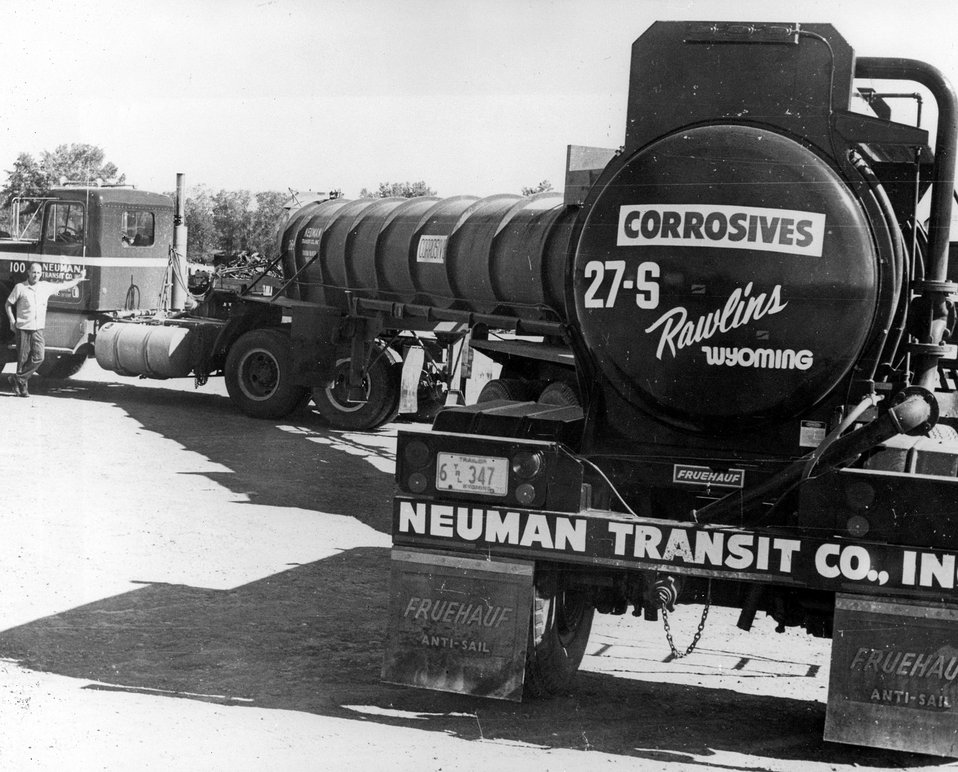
Fred Morrow, driver for Neuman Transit of Wyoming stands by the cab of his 75 ft 'train' acid semi and pump trailer. The train hauls chemicals to and from many Wyoming uranium mills. c. 1976